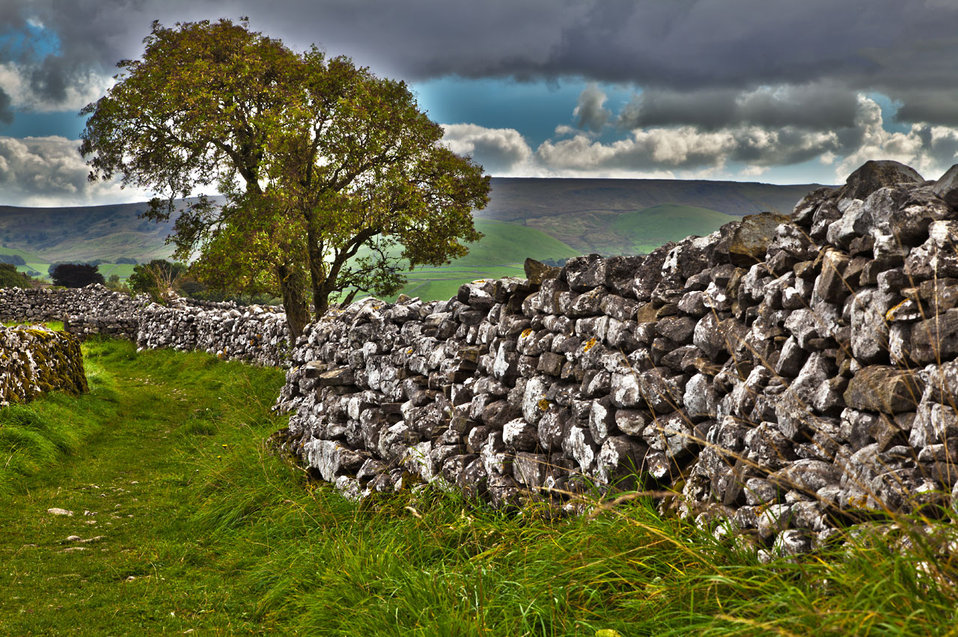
Tree and stone wall

Hdr photo of a stone wall and tree in yorkshire dales.